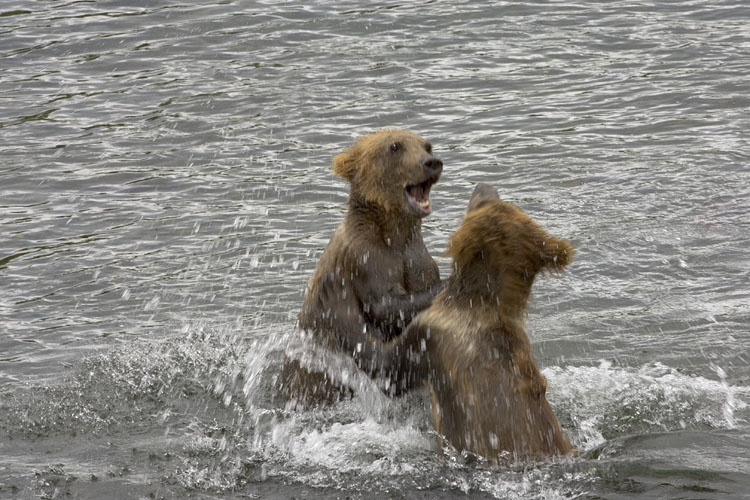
KOD Hildebrand (16)

Kodiak National Wildlife Refuge- Wildlife